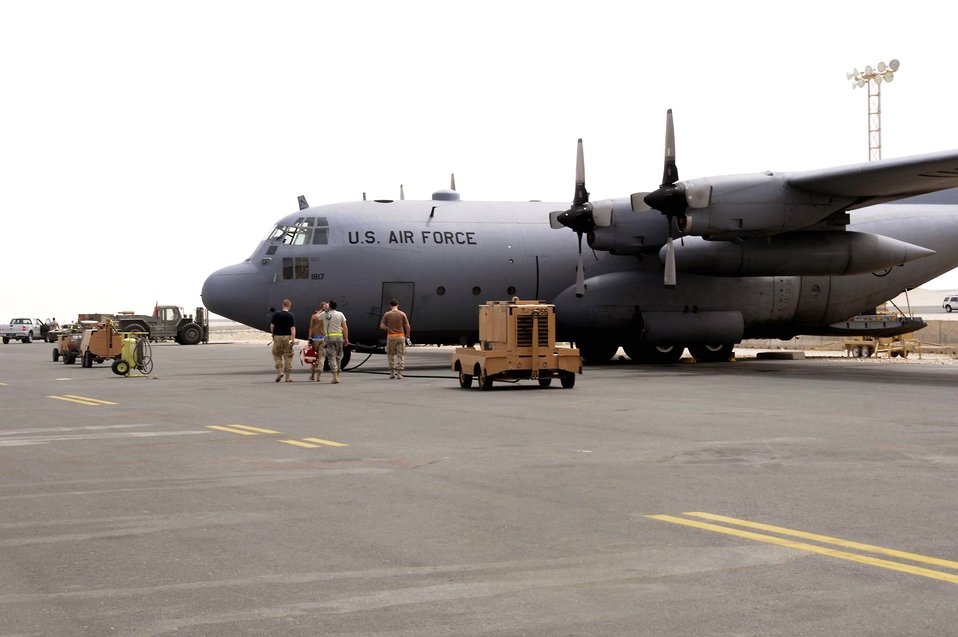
C-130 unit gets a new bird with an old history

Members of the 746th Expeditionary Aircraft Maintenance Unit at an air base in Southwest Asia prepare to do maintenance on a C-130 Hercules. The newly acquired aircraft, known as